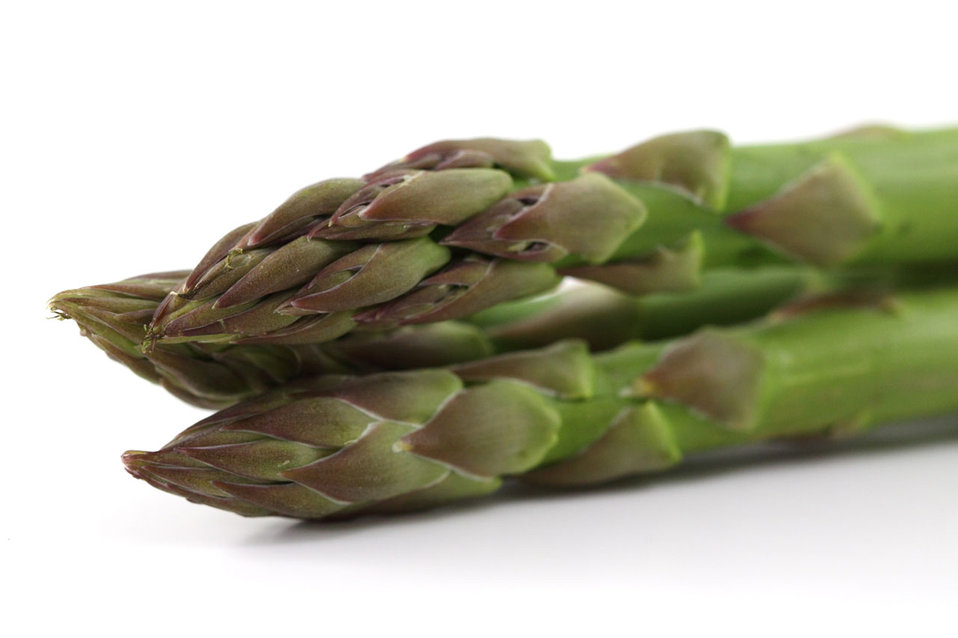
Asparagus

Close up of green asparagus.